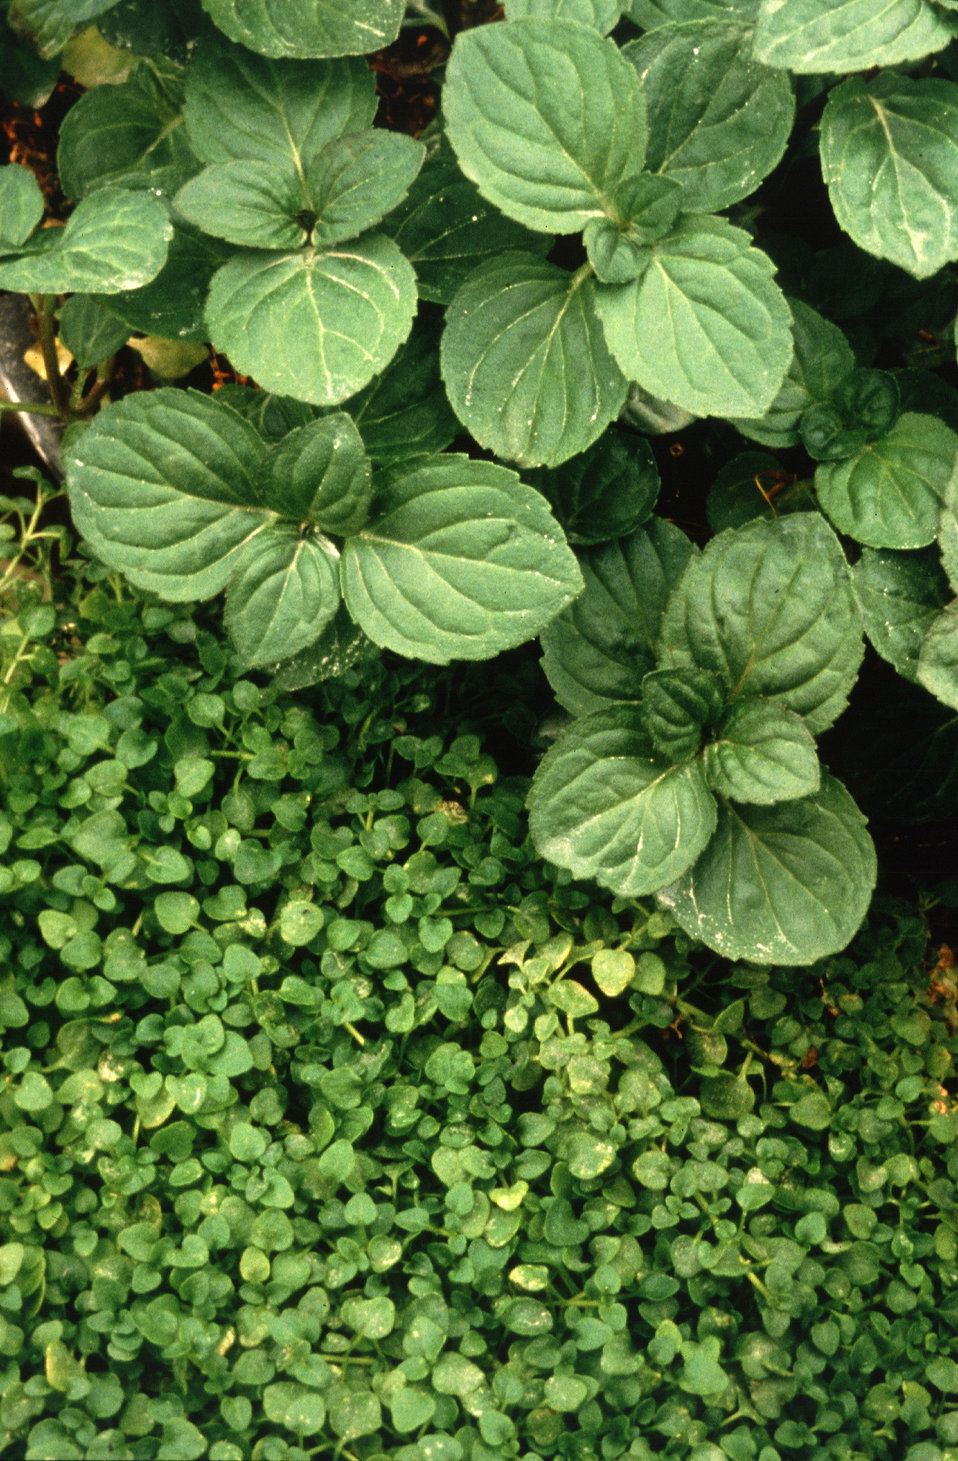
Peppermint (top) and fine-leafed Corsican mint (bottom) grow side by side.